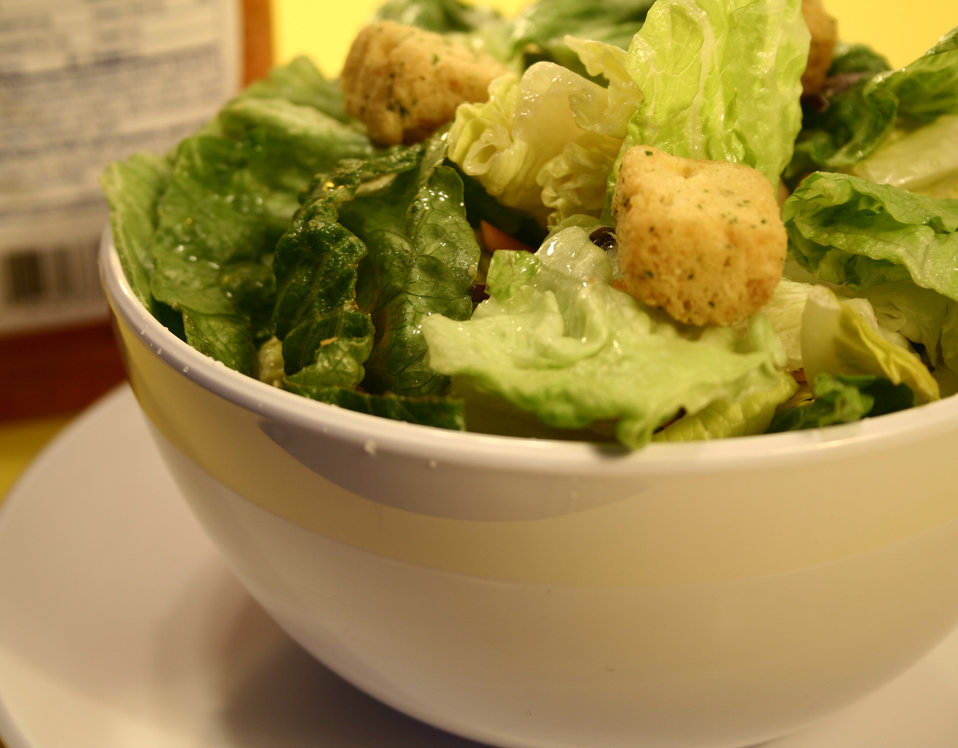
This photograph depicts a white ceramic bowl, which had been filled with a variety of lettuce leaves, croutons, and a salad dressing. The bowl had been set atop its accompanying white ceramic dish. Most dark greens are good sources of Vitamin C and other nutrients. The rule of thumb is, usually, the darker the greens, the more nutritious the leaf.